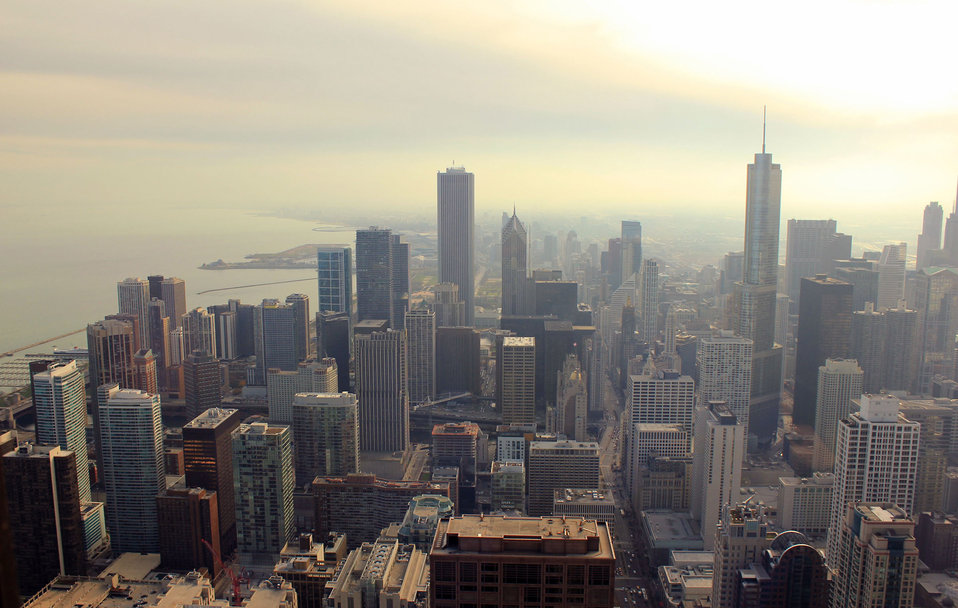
Chicago skyview

View of chicago from 96th floor of hancock building.